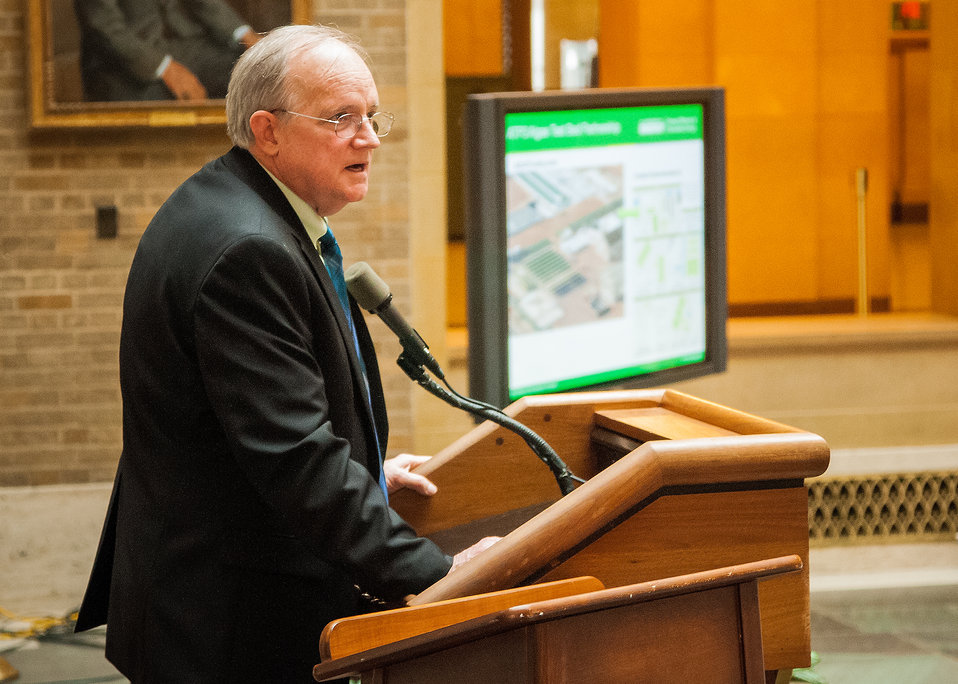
Department of Energy (DOE) Energy, Efficiency and Renewable Energy John Carroll explains the Biomass and Algae Programs and program goals of the DOE at the U.S.-Israel Bio-Challenge Symposium at the U.S. Department of Agriculture (USDA) in Washington, D.C. on Thursday, Apr. 18, 2013.